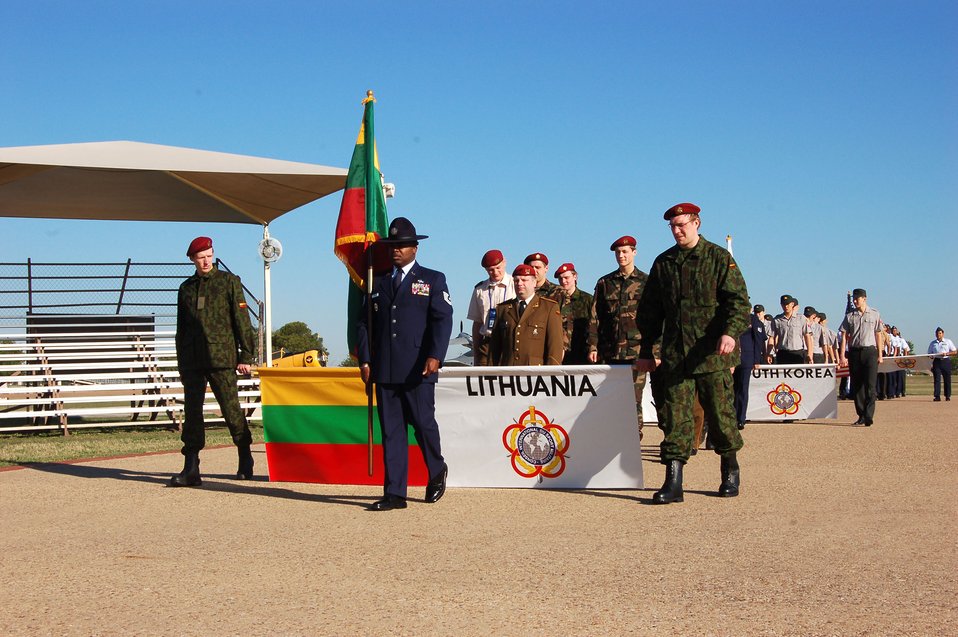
International basketball tournament kicks off at Lackaland

Teams of basketball players march during the opening ceremony of the 2008 International Military Sports Council Basketball Tournament April 14 at Lackland Air Force Base, Texas. The tournament features teams from the United States, Greece, Italy, South Korea, Canada, Latvia and Lithuania.